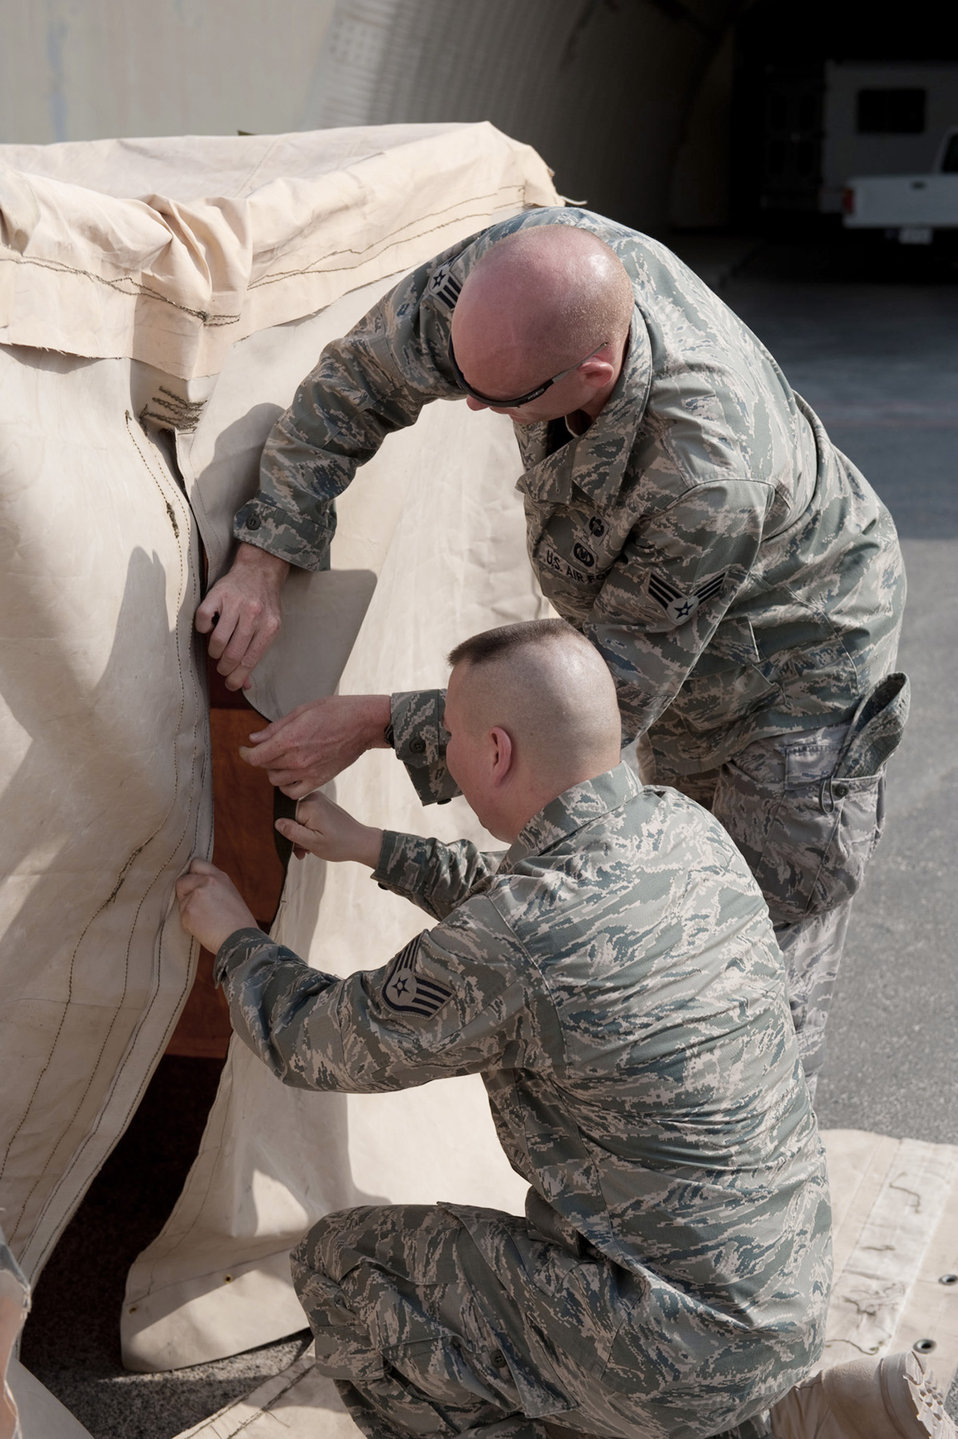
Innovative Airmen make jobs, lives easier

Staff Sgt. Delray Sexton and Senior Airman Shane Shanton assemble a custom tent Aug. 22 in Southwest Asia. The tent is designed to provide shade and respite for flightline maintainers during work-rest cycles in extreme temperatures. Sergeant Sexton is deployed from Holloman Air Force Base, N.M. Airman Shanton is deployed from Kirtland AFB, N.M. Both servicemembers are 379th Expeditionary Operations Support Squadron aircrew flight equipment personnel.